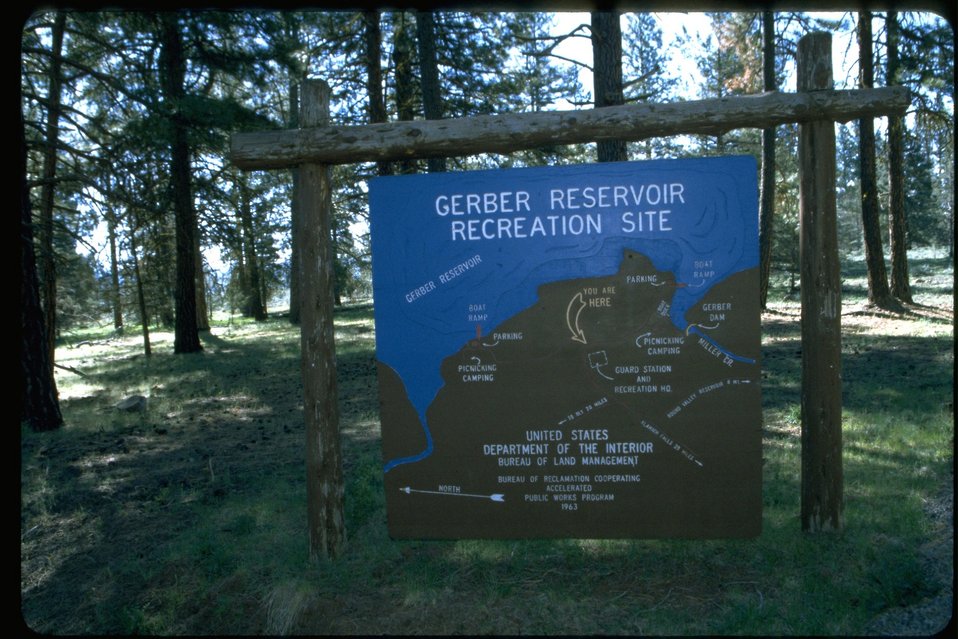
Gerber Reservior Recreation Site sign.